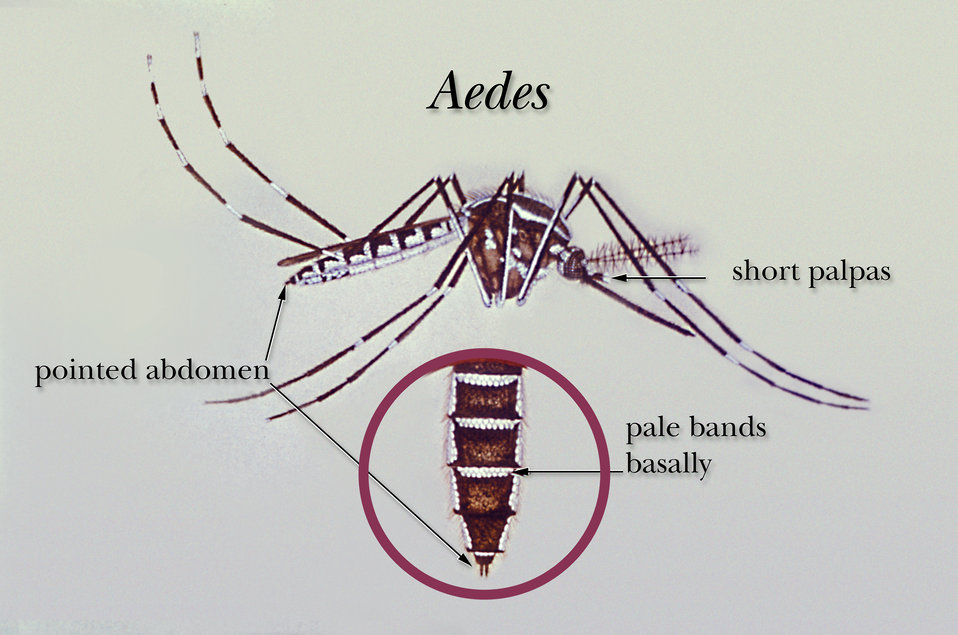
An illustration of an Aedes mosquito.